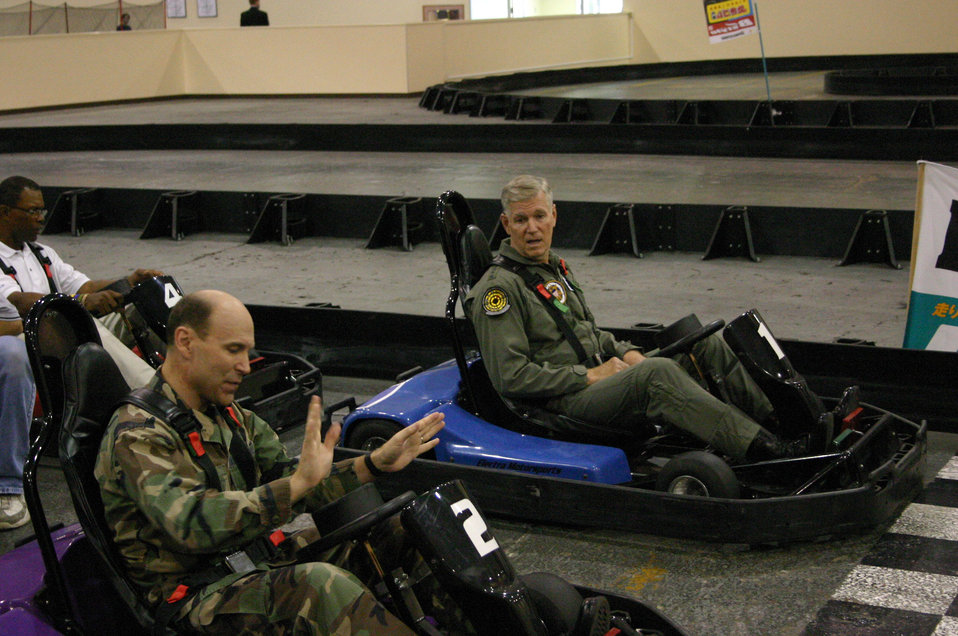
Paying a visit

MISAWA AIR BASE, Japan -- Brig. Gen. William J. Rew (left) and Chairman of the Joint Chiefs of Staff Gen. Richard B. Myers prepare to race go-carts. General Myers and United Service Organizations entertainers stopped here Aug. 22 as part of a tour that has visited troops in Kosovo, Germany, Iraq, Afghanistan, South Korea and Hawaii. General Rew is the 35th Fighter Wing commander.